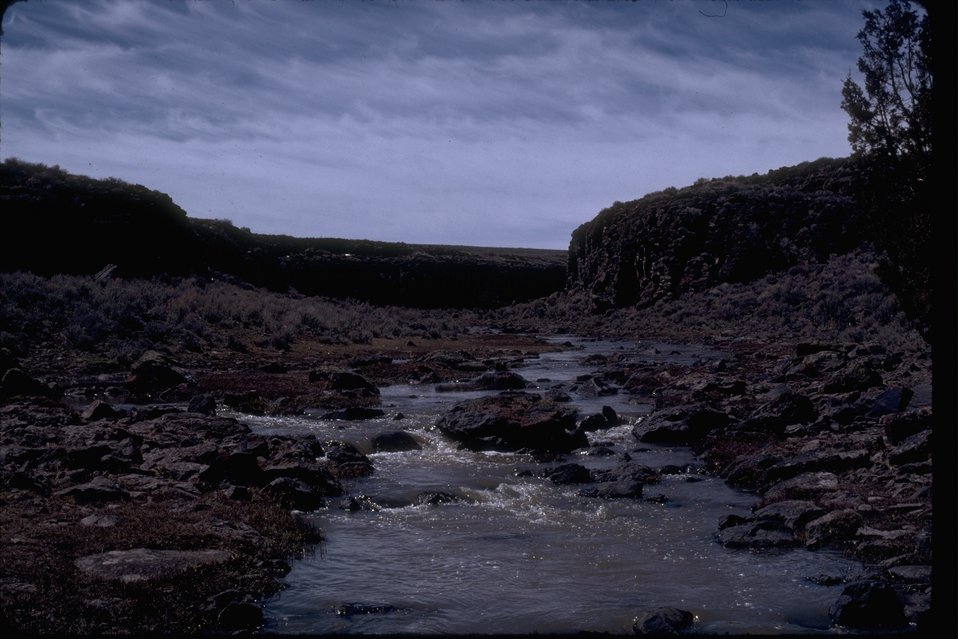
Guano Creek 1-132